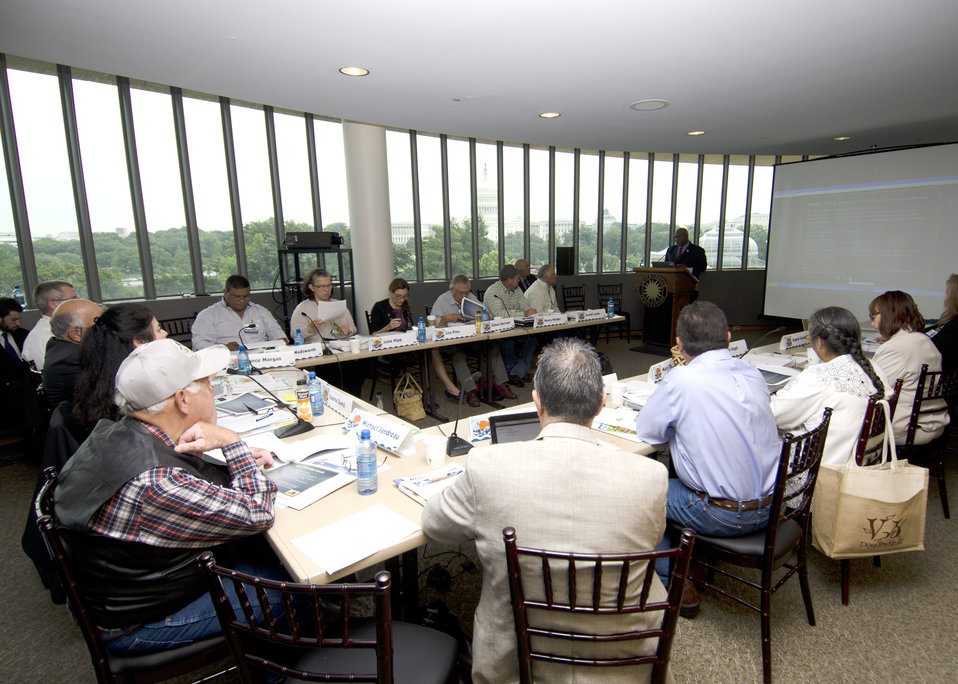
The first business meeting of the U.S. Department of Agriculture's (USDA) Council for Native American Farming and Ranching (CNAFR) meets at the first business meeting of the U.S. Department of Agriculture’s (USDA) Council for Native American Farming and Ranching (CNAFR) held at the National Museum of the American Indian in Washington, D.C., on Tuesday, Aug. 14, 2012. CNAFR was created to advise the Secretary on ways to eliminate barriers to participation for Native American Farmers and Ranchers in USDA programs. The Council was established as part of the Keepseagle settlement, and is conducted under the oversight of USDA's Office of Tribal Relations under the Office of the Secretary of Agriculture.